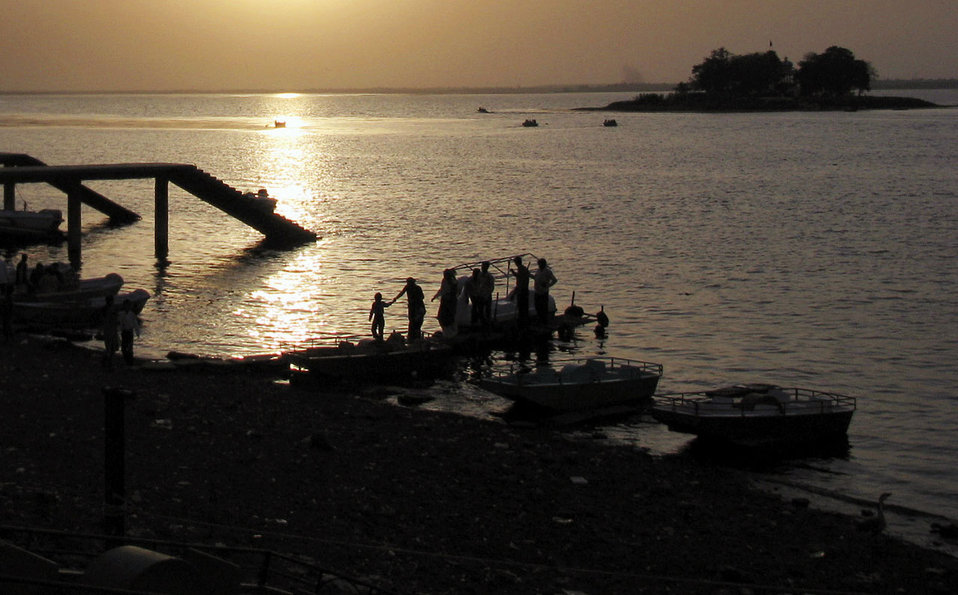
Pleasure boating on the lake at sunset.